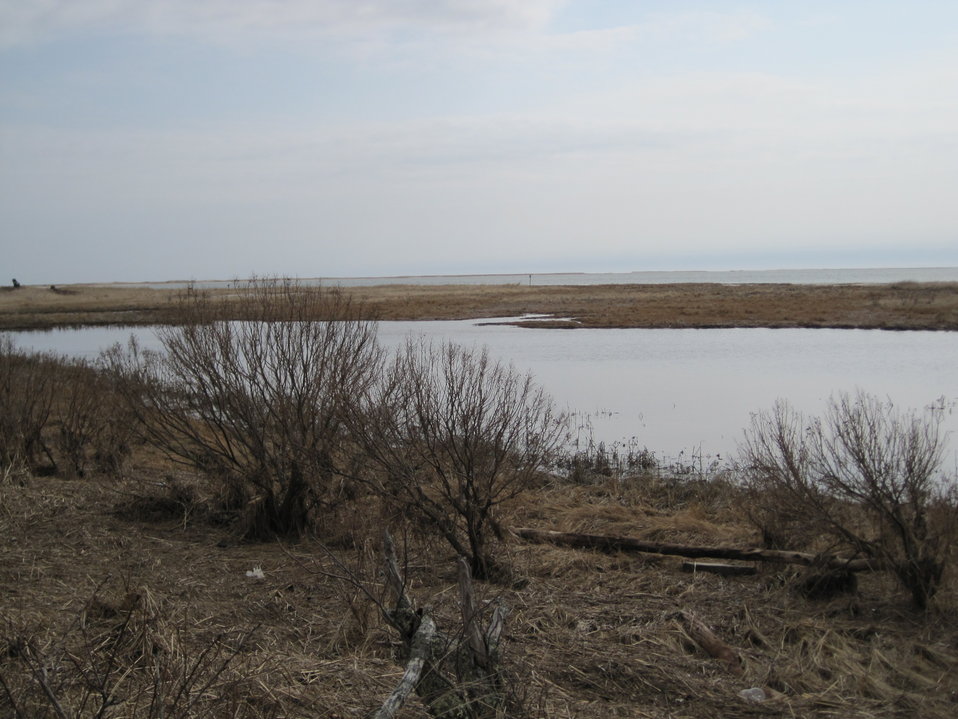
Monomoy National Wildlife Refuge

Wetlands along the Morris Island Trail.

Credit: Keith Shannon/USFWS

Monomoy National Wildlife Refuge is part of the Eastern Massachusetts National Wildlife Refuge Complex.